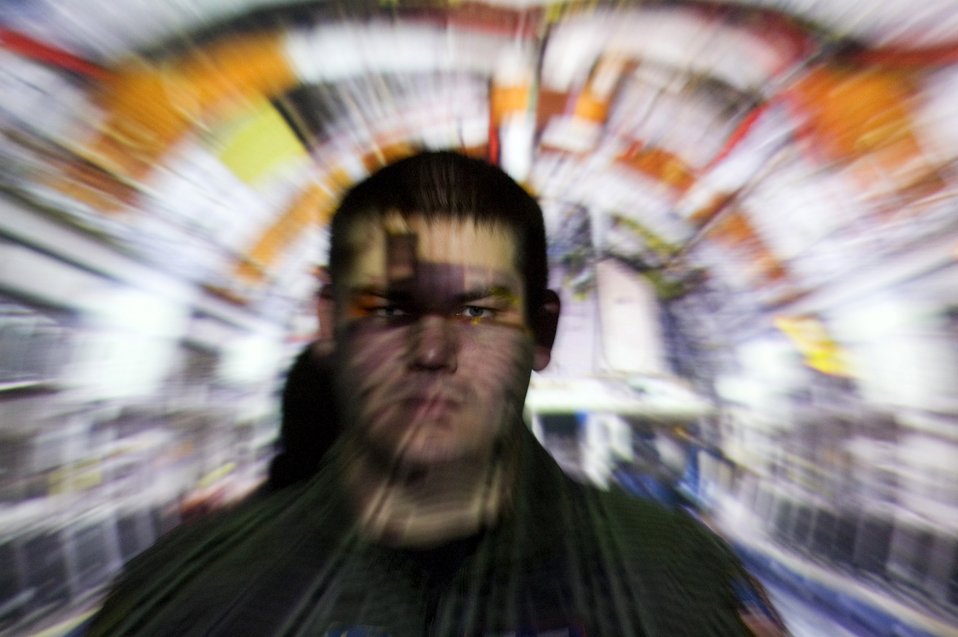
Training in a virtual world

Staff Sgt. Daniel Paxton, an aeromedical evacuation technician instructor, observes students during a virtual walk-through of a C-17 Globemaster III in a simulator that allows students to experience the aircraft's med-evac capabilities in a classroom environment.